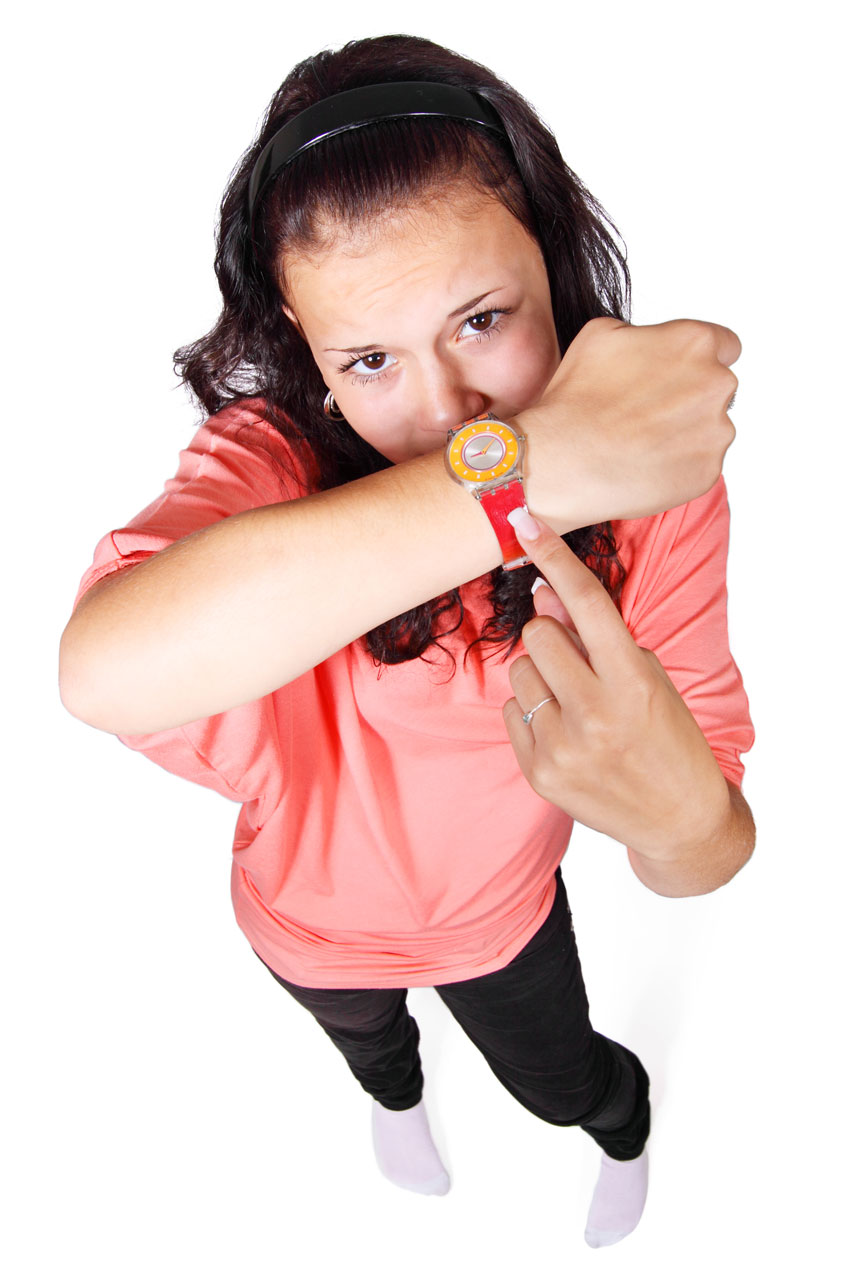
You are late

Young woman pointing at her watch.